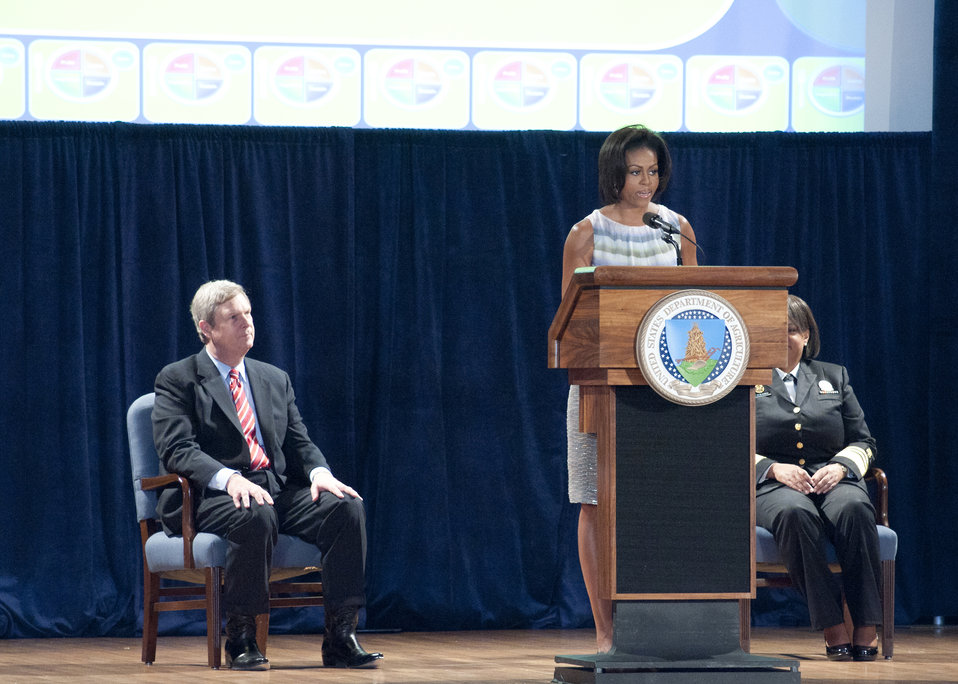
First Lady Michelle Obama talks about the new Food Icon MyPlate (seated Agriculture Secretary Tom Vilsack) on Thursday, Jun. 2, 2011in the Jefferson Auditorium, U. S. Department of Agriculture (USDA). This new icon will replace the USDA’s MyPyramid image as the government’s primary food group symbol. MyPlate is an easy-to-understand visual cue to help consumers adopt healthy eating habits that are consistent with the 2010 Dietary Guidelines for Americans. MyPyramid will remain available to interested health professionals and nutrition educators in a special section of the new website.